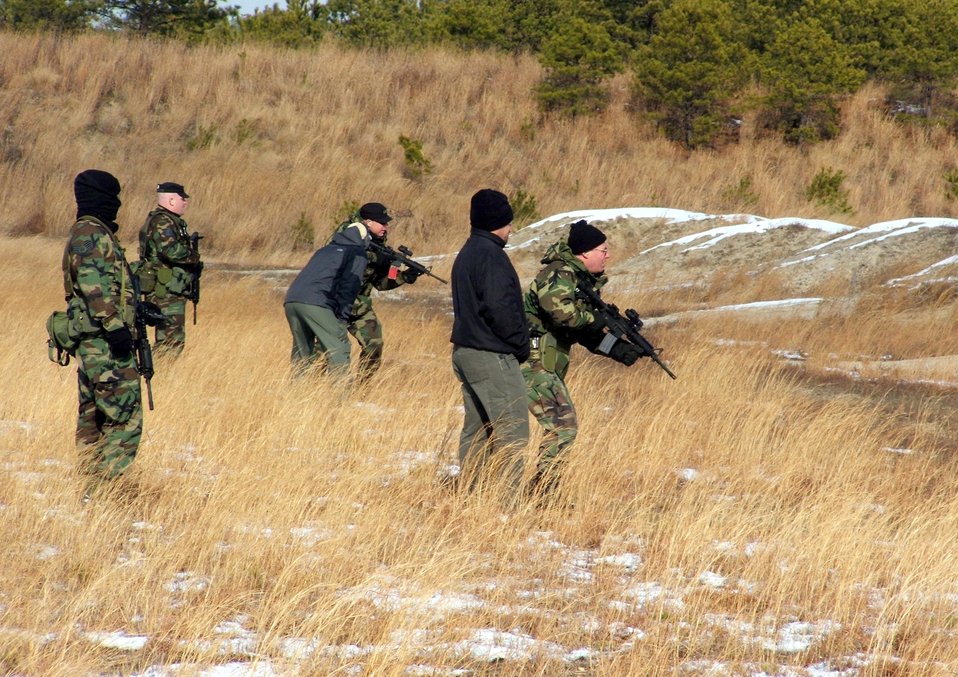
Learning the rules

FORT DIX, N.J. (AFPN) -- Students prepare to use their M-4 rifles during a tactical live-firing exercise. The training is part of the Rules of Engagement/Rules of Use of Force Tactical Training Seminar held at the Air Mobility Warfare Center here Dec. 6 to 8.